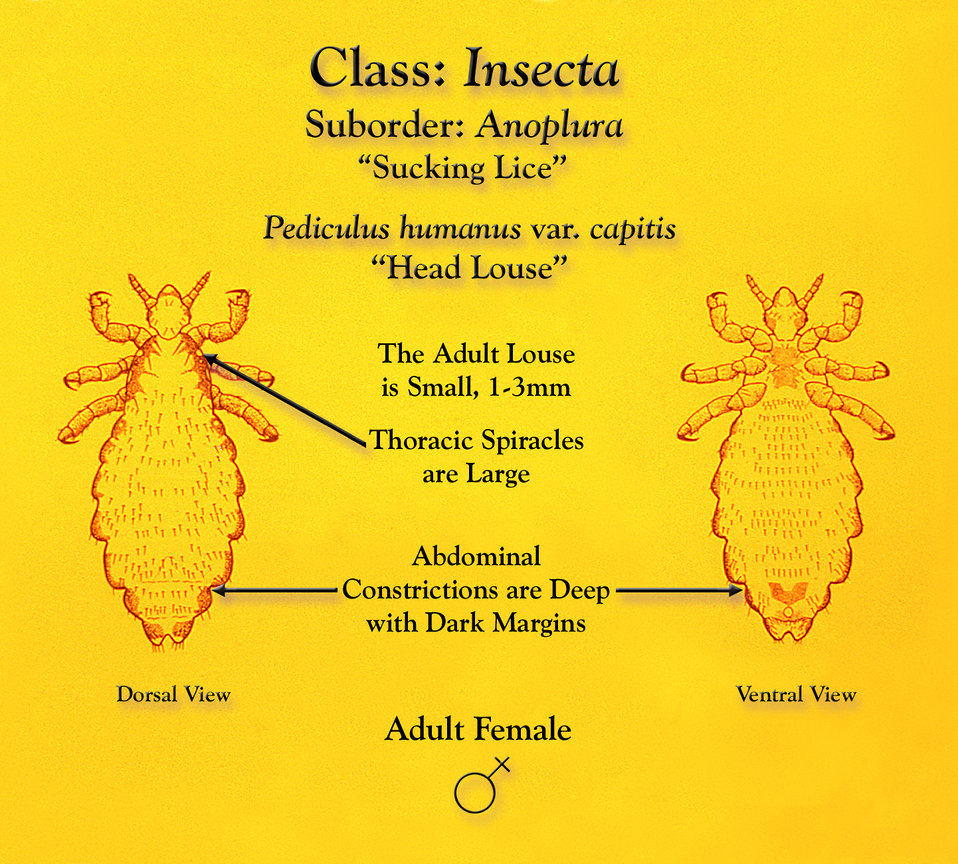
This illustration depicts some of the morphologic characteristics of a female head louse, Pediculus humanus var. capitis from dorsal (Lt) and ventral (Rt) views.